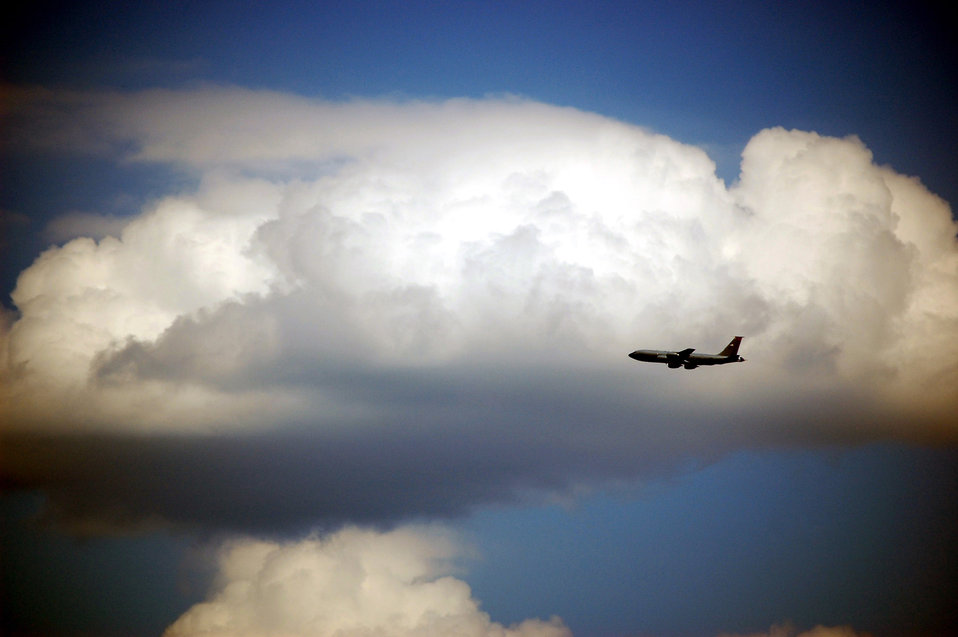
Soaring high

A KC-135 Stratotanker flies over McGuire Air Force Base, N.J., May 12 on its way to an air refueling mission. The aircraft provides increased global mobility for U.S. armed forces.